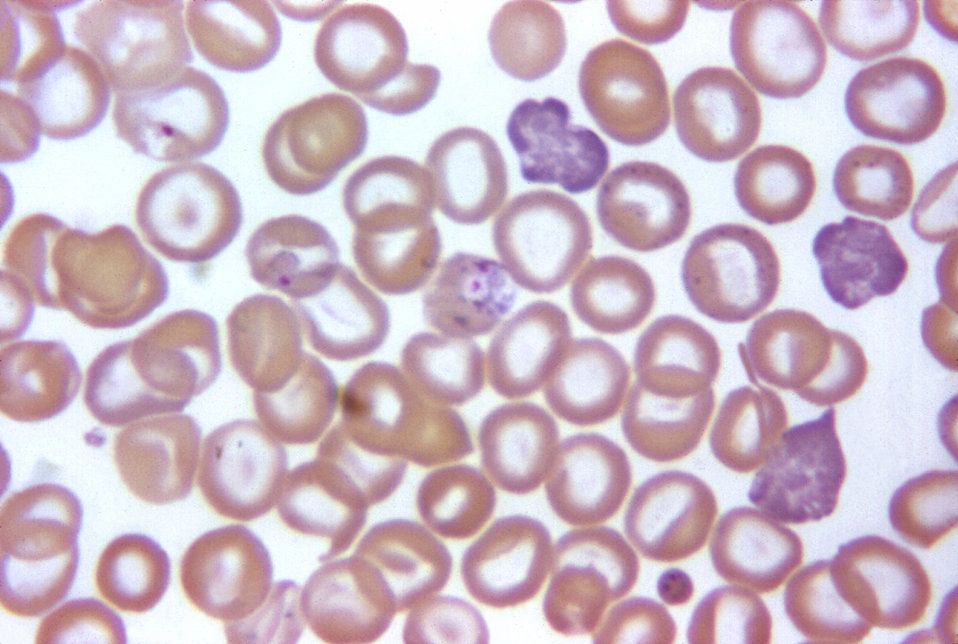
This micrograph depicts the appearance of a slide that has been Wright's stained using an 'automatic staining' device.